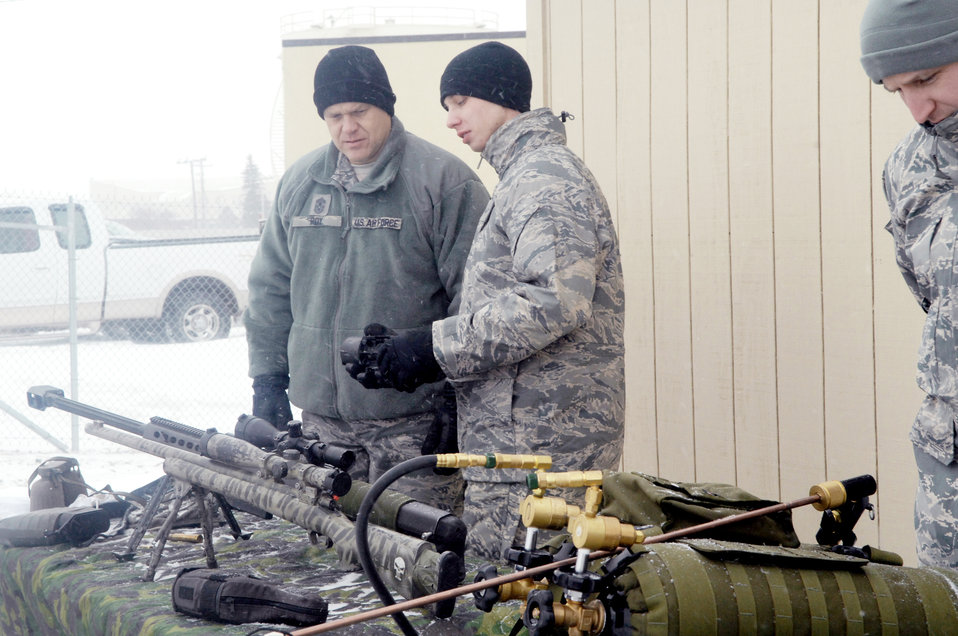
CMSAF Christmas visit

Chief Master Sgt. of the Air Force James Roy is shown weapon equipment Dec. 24, 2009, by Airman First Class Justin Allison from the 91st Missile Security Forces Squadron at Minot Air Force Base, N.D. Chief Roy spent the Christmas holiday there and used the opportunity to meet Airmen from both the 5th Bomb Wing and the 91st Missile Wing and tell them their work in the nuclear enterprise is critical and that Air Force leaders are committed to their development.